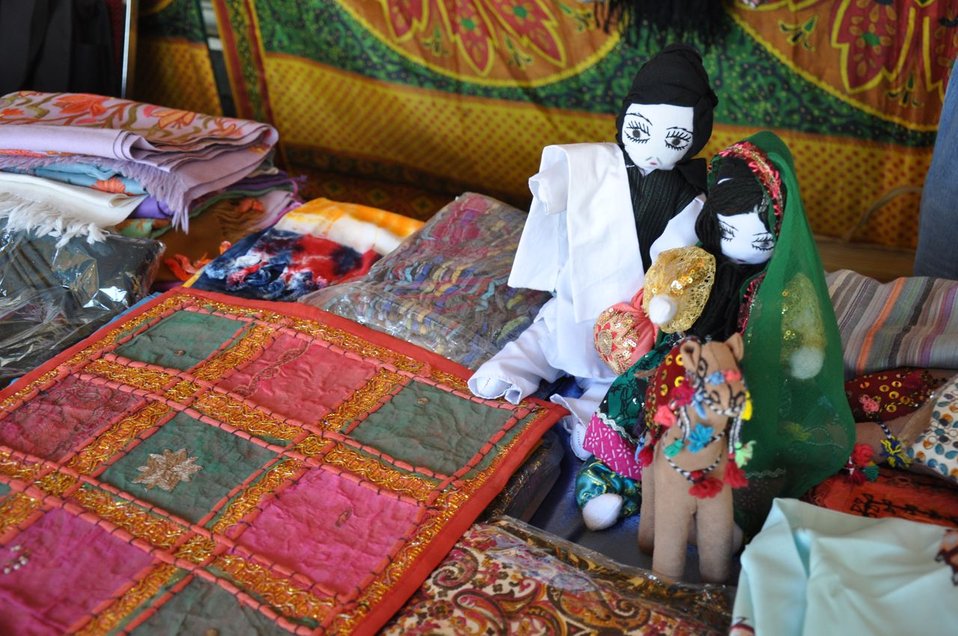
Mother's Day in Afghanistan

Handmade items at the bazaar